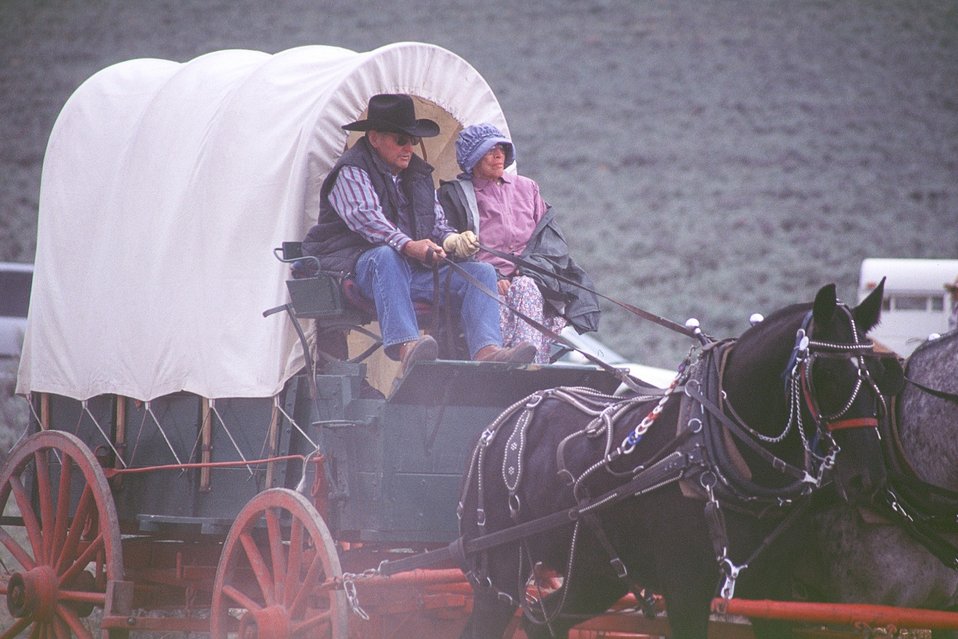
NHOTIC 10th Anniversary, wagon train reenactment. Pioneers and covered wagon on the Oregon Trail.